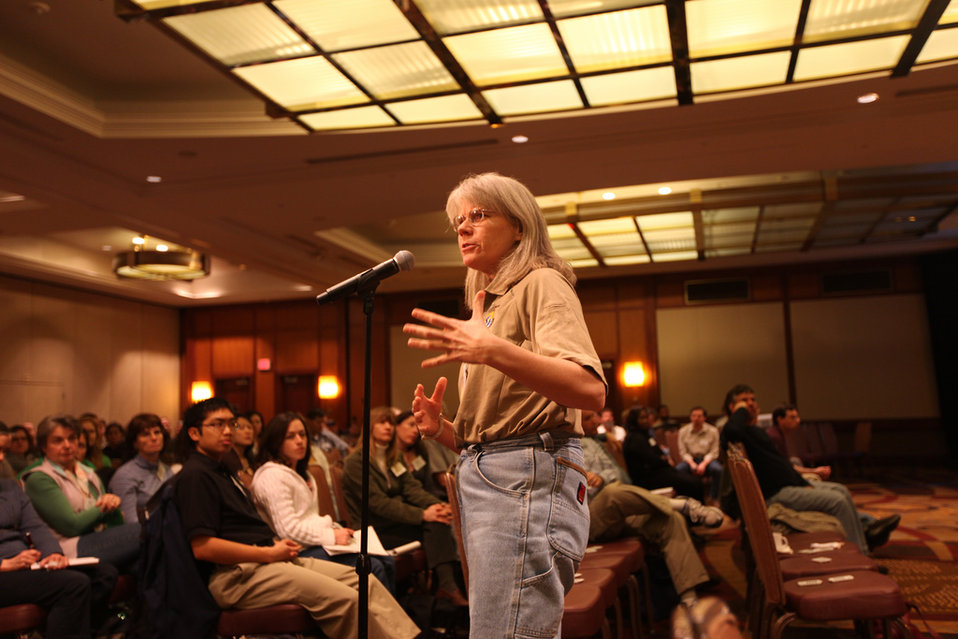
Town Hall

Biologist speaking at the Friday morning Town Hall session, where attendees were welcome to discuss their ideas on how to further landscape conservation.